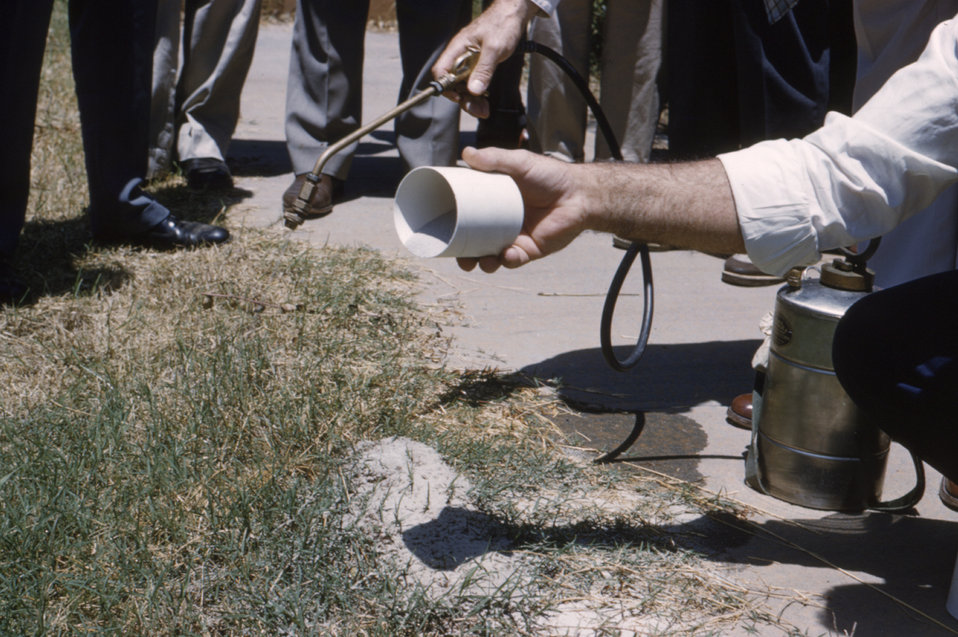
This photograph shows an individual applying toxic dieldrin granules to a fire ant hill.